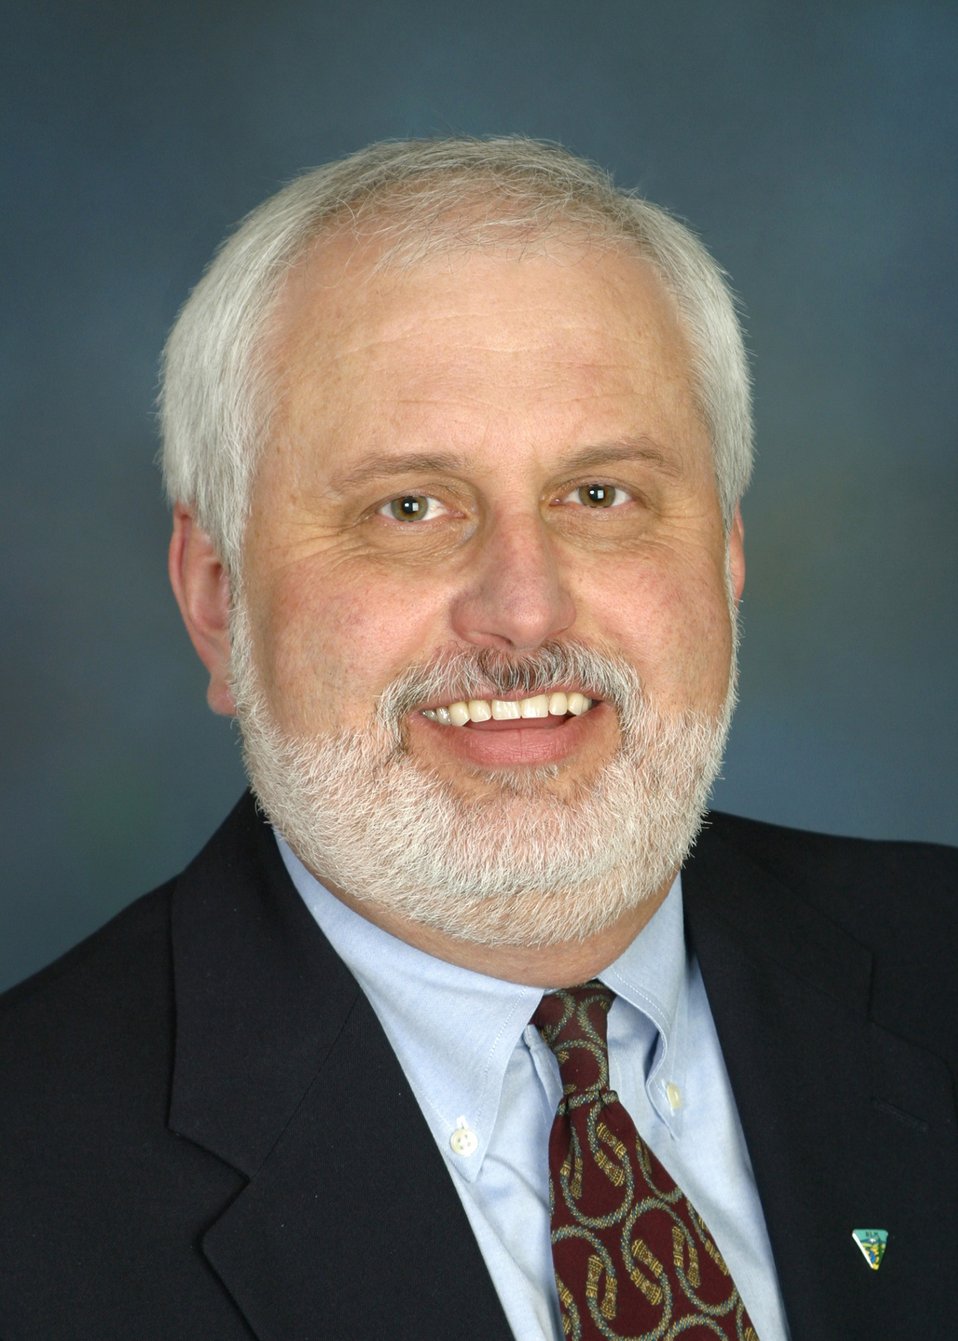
Chuck Wassinger ASD Oregon / Washington State Office